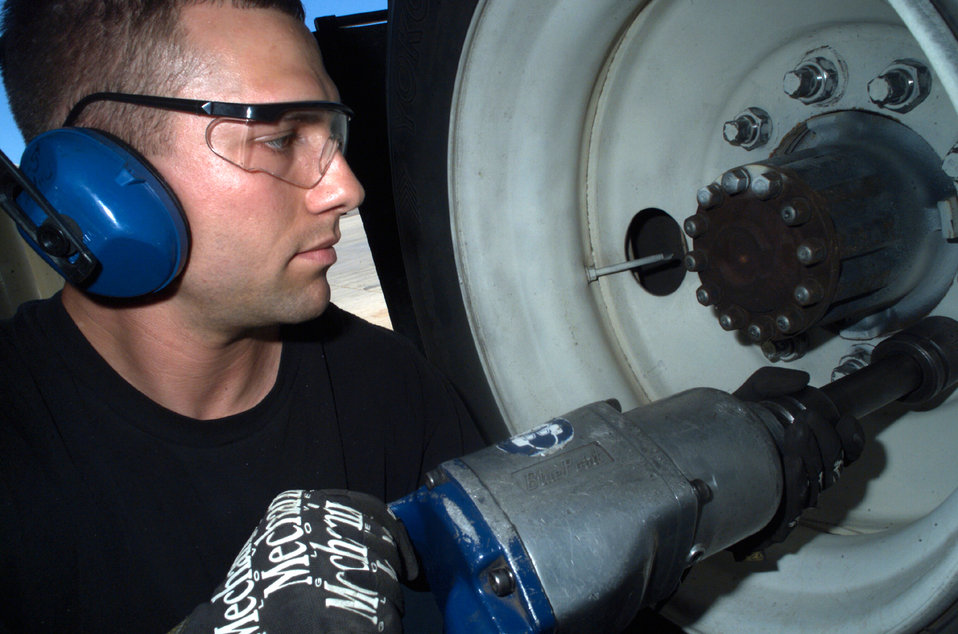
Taking care of business

DAVIS-MONTHAN AIR FORCE BASE, Ariz. -- Staff Sgt. Scott Becker replaces a tire on a 10-ton tractor. He is a special-purpose vehicle mechanic with the 355th Logistics Readiness Squadron here.